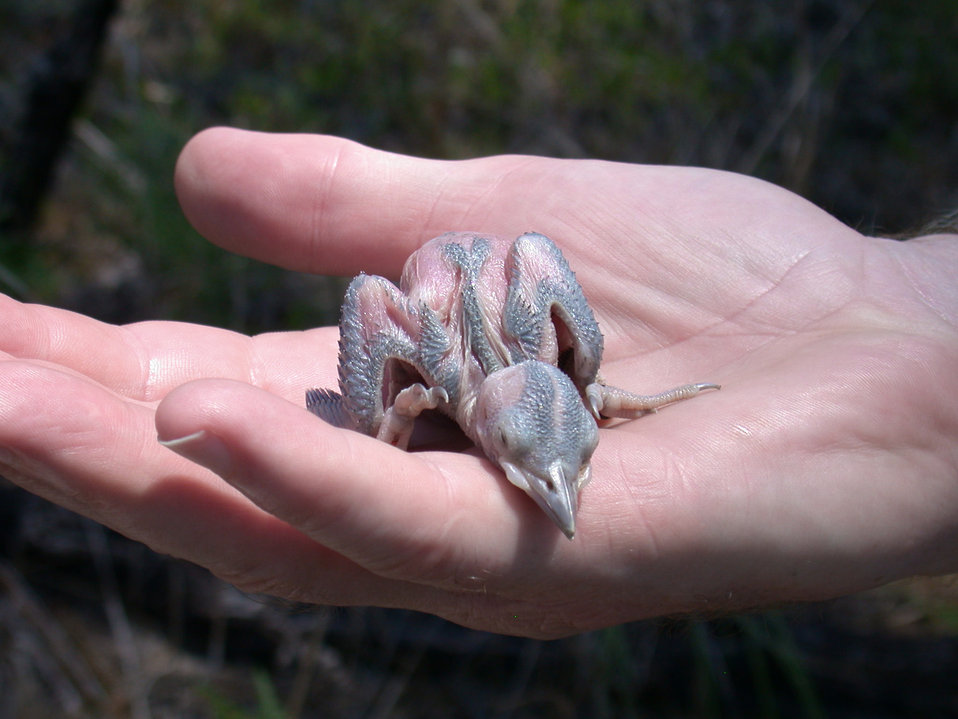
Air Force conservation programs

A red-cockaded woodpecker chick is held by a wildlife biologist at Eglin Air Force Base, Fla. Foresters implement periodic controlled burns to maintain the mature longleaf pine landscape and provide a suitable environment for the birds.